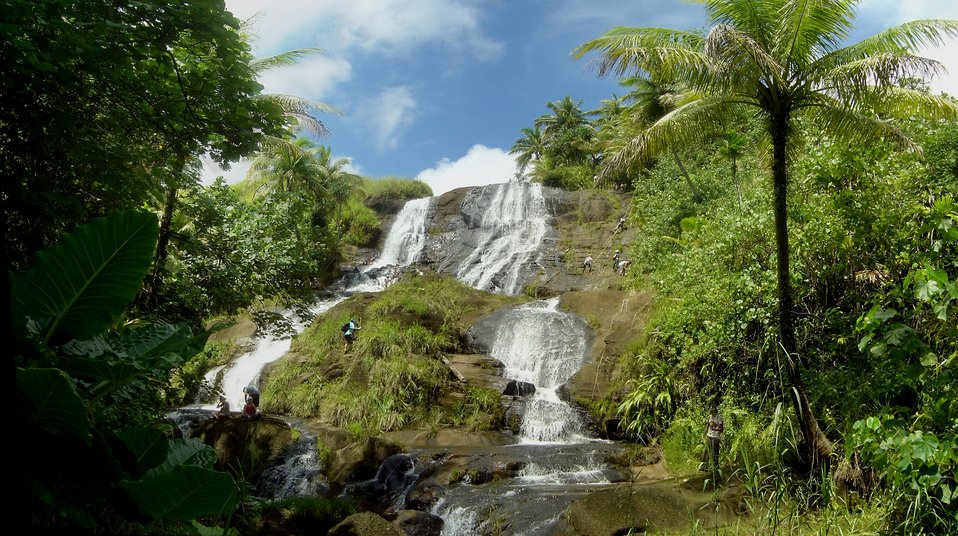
Inajaran Falls in the interior of Guam.